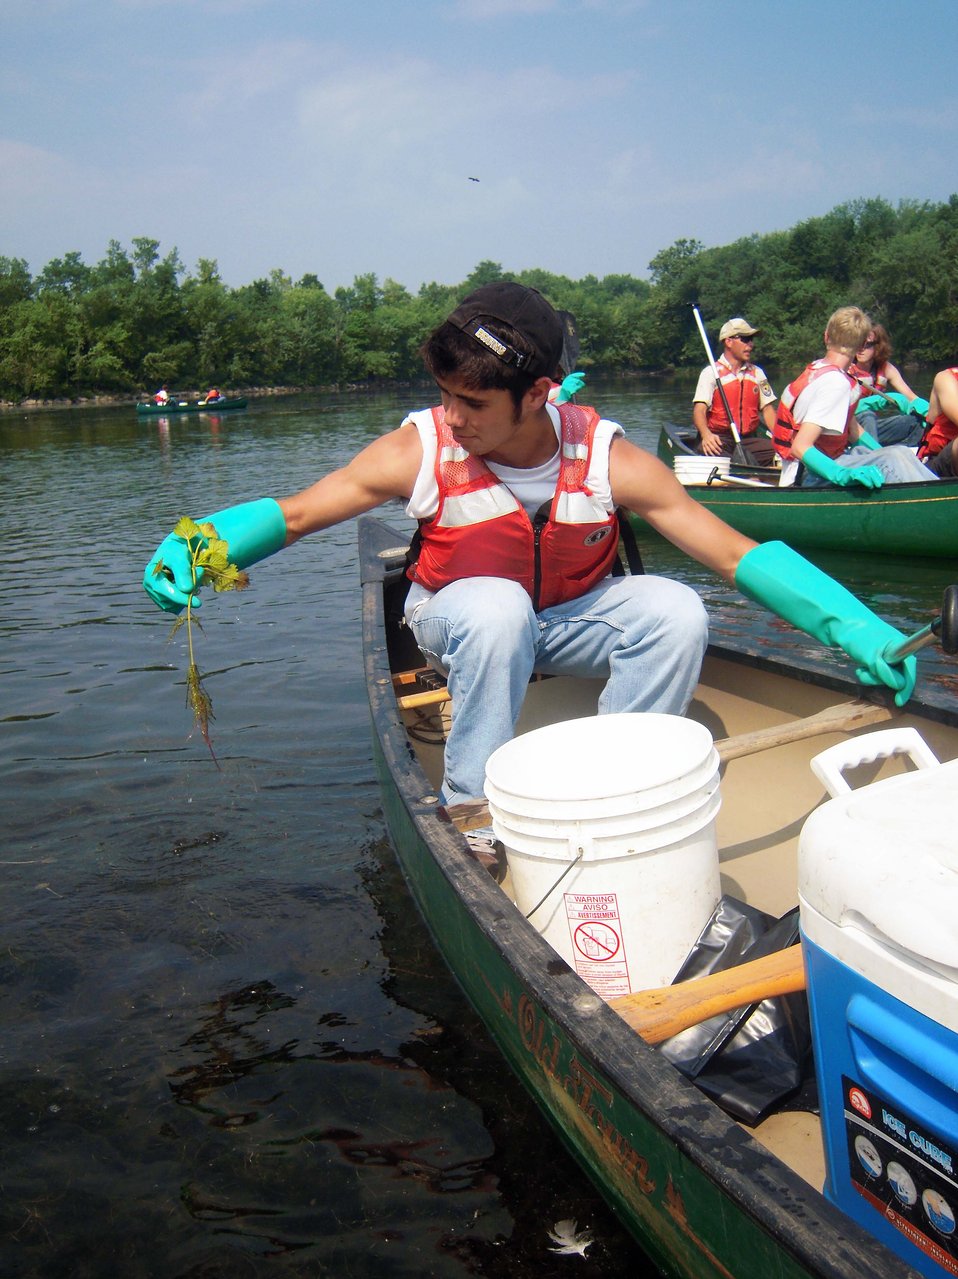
YCC crew removing water chestnut